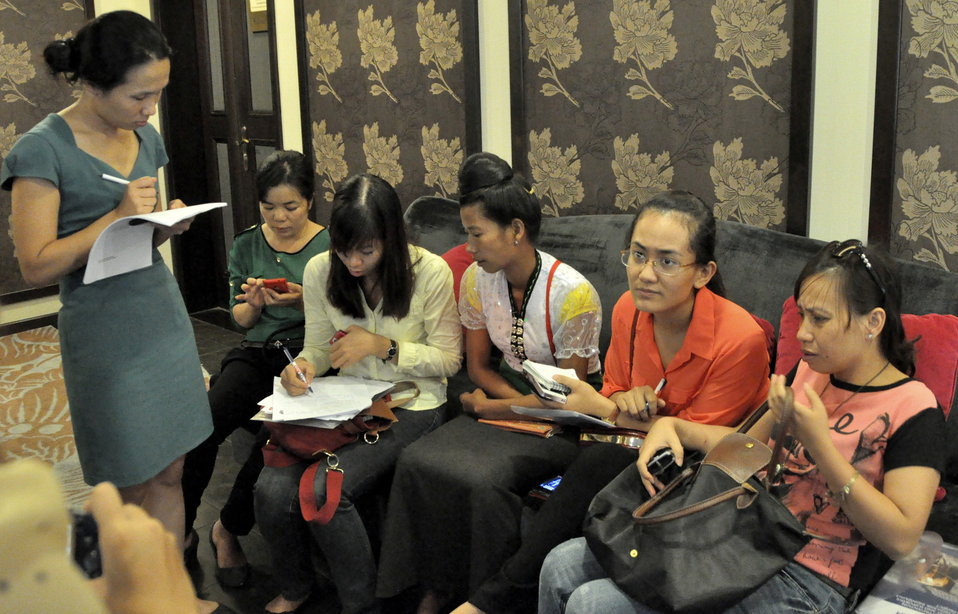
A beneficiary of USAID HIV Workplace Project talk to reporters on the sidelines of the event.

Hanoi, June 20, 2013.